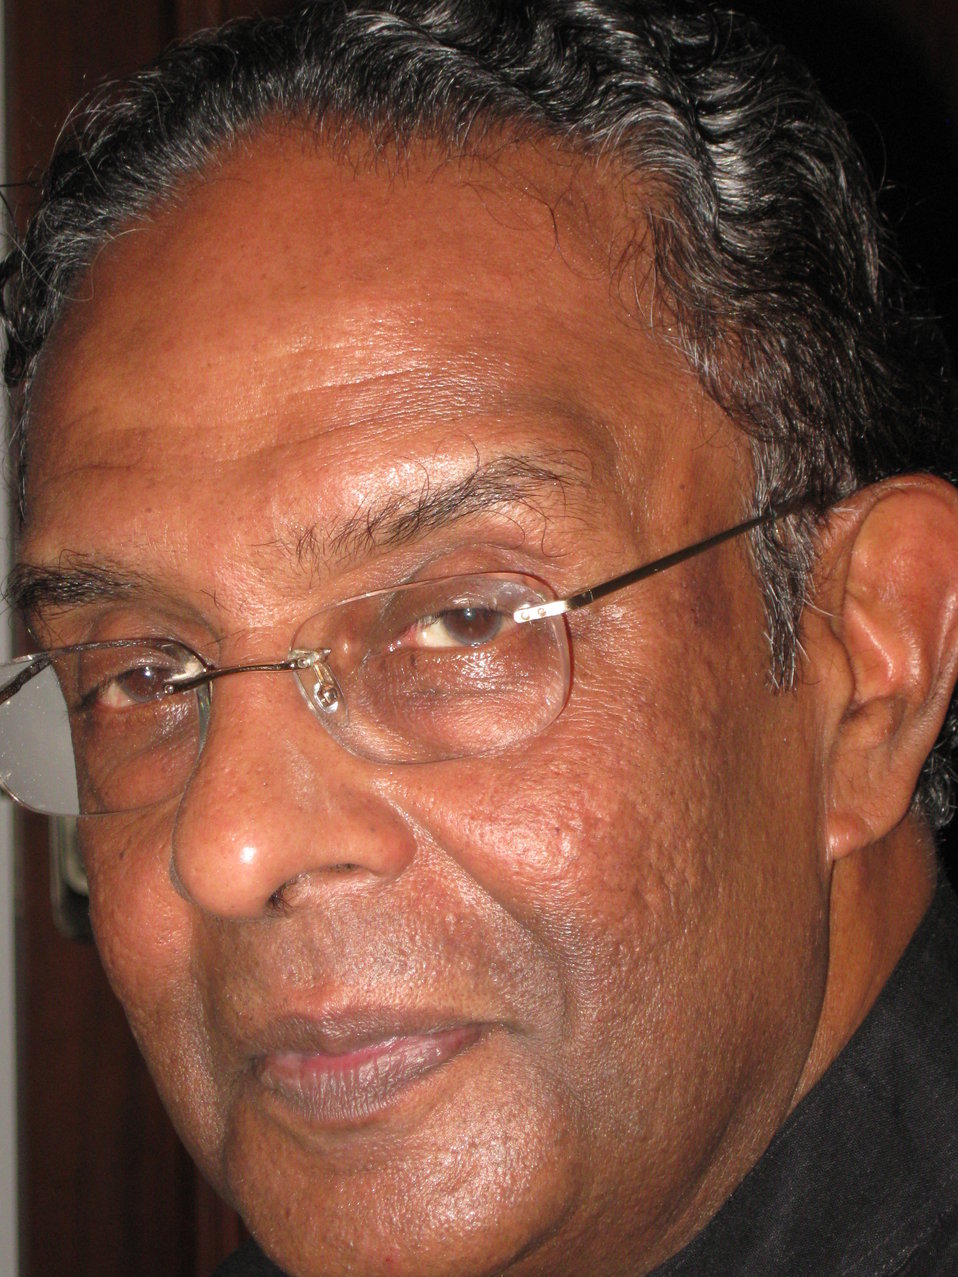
Photograph of Hon D.M. Swaminathan